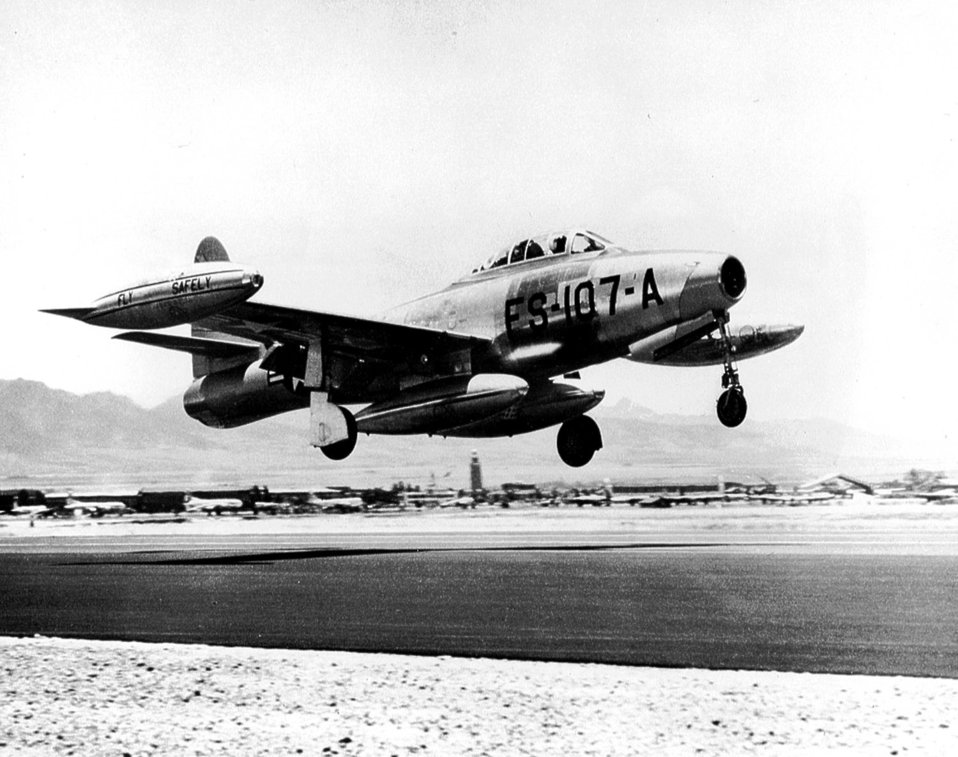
Operation Fox Peter One

An F-84G Thunderjet takes off from Hickam Air Force Base, Hawaii, in the historic Operation Fox Peter One in the summer of 1952. In this operation, the 31st Strategic Fighter Wing flew across the United States to Japan in the first mass movement of an entire wing.